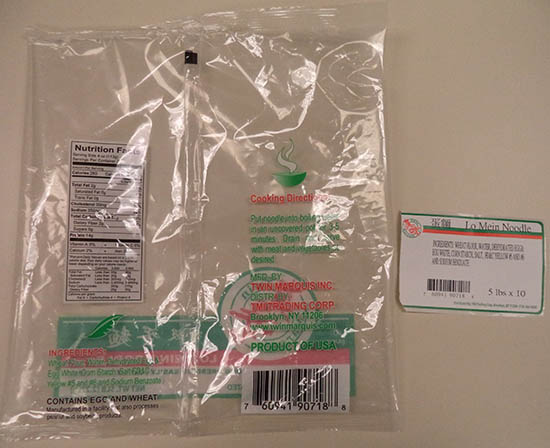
RECALLED – Cooked Noodle and Lo Mein Noodle

March 03, 2014 – Product Recall – Twin Marquis, Inc Issues Allergy Alert on Undeclared Milk in Specific Lots of its Cooked Noodle and Lo Mein Noodle.